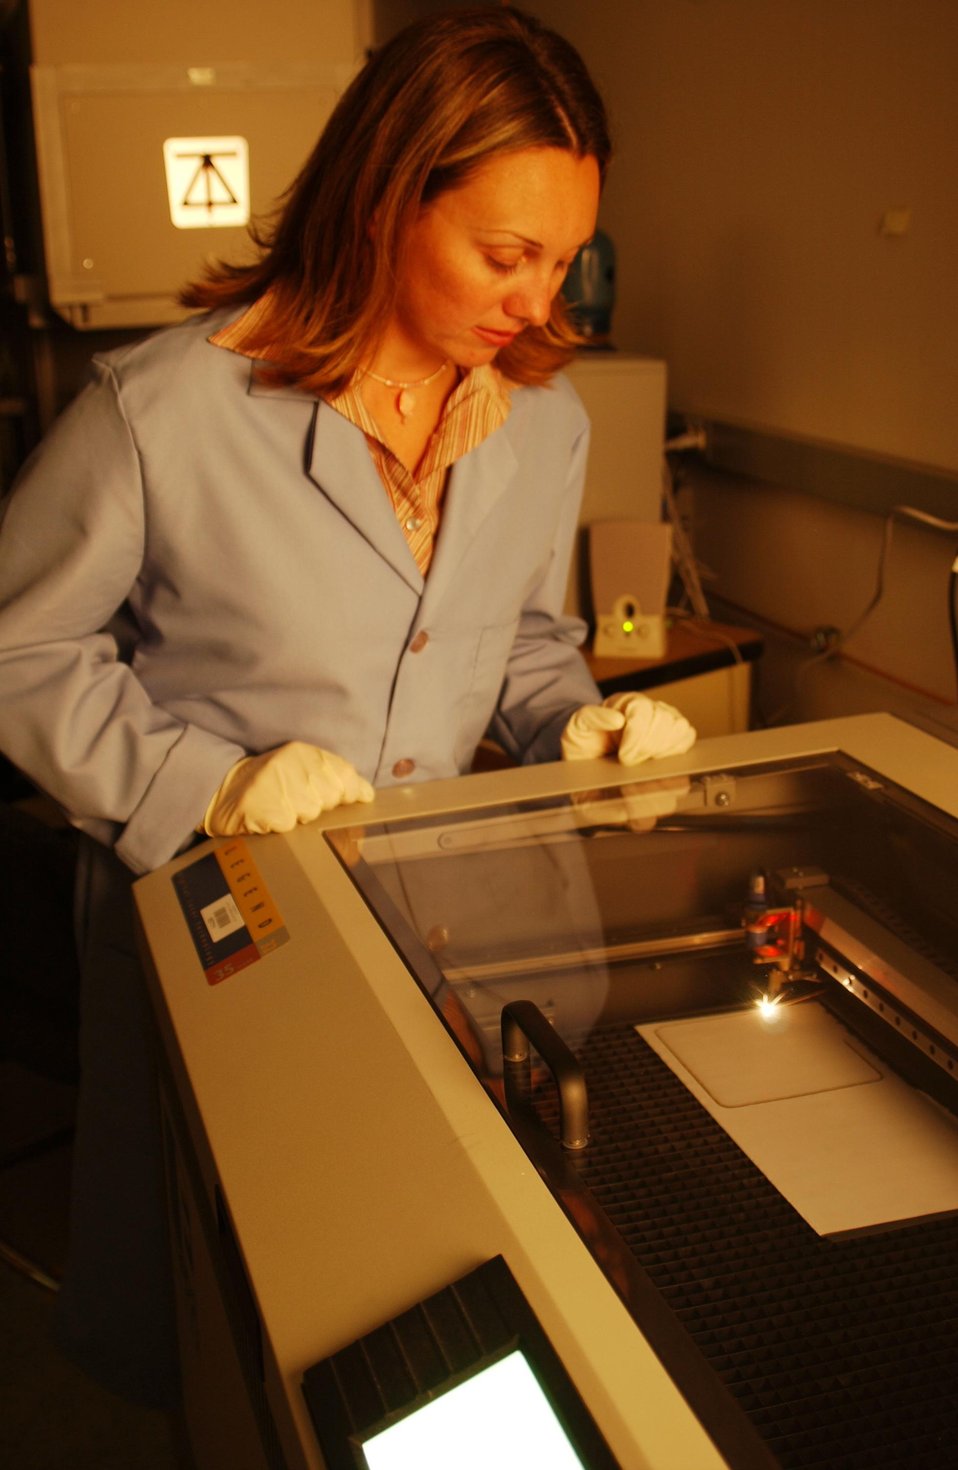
A PNNL RESEARCHER OVERSEES A PROCESS USING A LASER CUTTER TO MAKE SOLID OXIDE FUEL CELLS (SOFC).

THE LASER CUTTER MAKES POSSIBLE RAPID PROTOTYPING OF NEW SOFC GEOMETRIES WITHOUT THE ADDITIONAL COST OF STAMPING DIES.